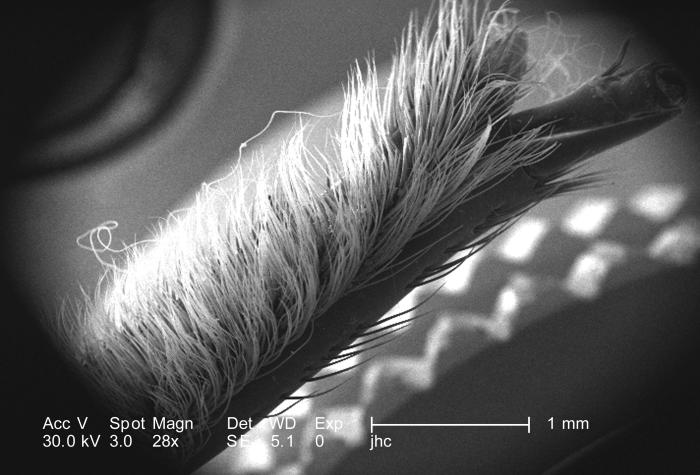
Under a magnification of only 28X, this scanning electron micrograph (SEM) depicted some of the exoskeletal morphologic characteristics displayed on the head region of an unidentified beetle found deceased in the suburbs of Decatur, Georgia. In this particular view, the proximal aspect of what is believed to be one of the insect's two maxillary palps is displayed, at a point where the palp attaches to the maxilla. The palps act both as feelers, which means that they're sensorial in nature, as well as organs of food manipulation. The beetle is able to use these palps to position its foods in the most opportune position for chewing, and grasping with its mandibles. See PHIL 10062, 10063, and 10064, for addition views of this structure.